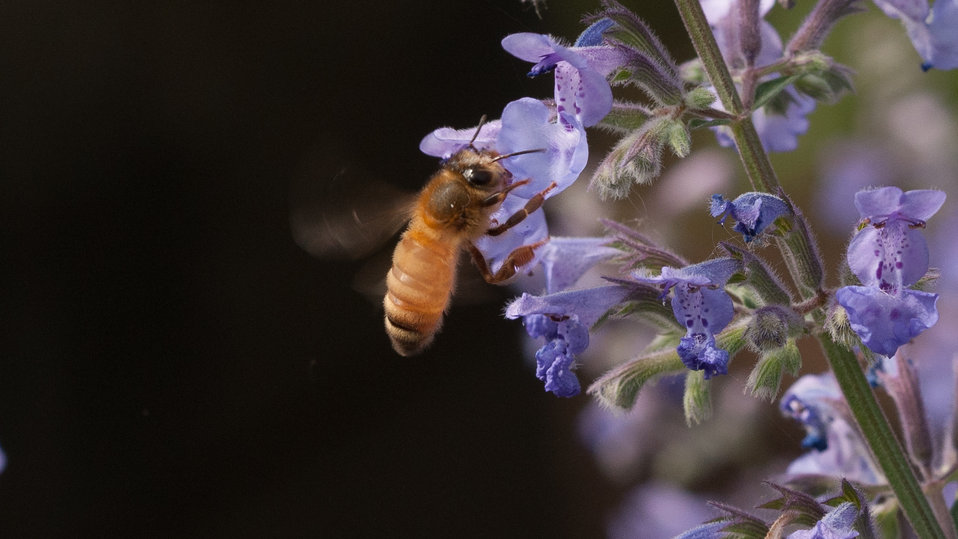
A honey bee is attracted to flowers in the U.S. Department of Agriculture People's Garden, pollinator garden, outside the headquarters' Whtten Building in Washington, D.C., on Wednsday, May 22, 2013.